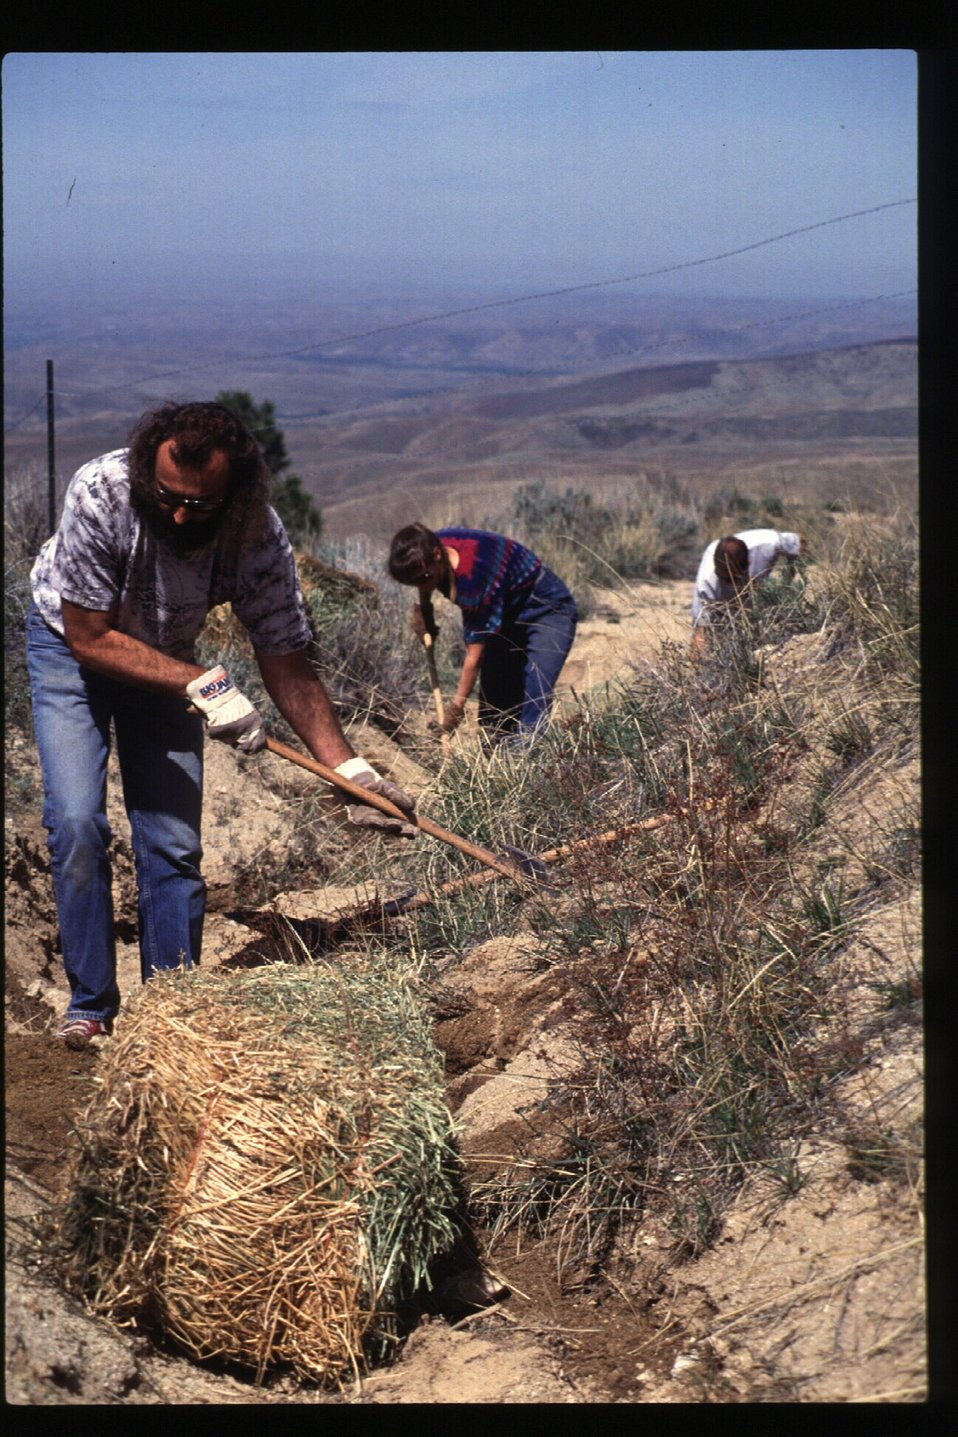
Rangeland and environmental education Boise Front Tending our Foothills Straw bale check dams Four Rivers Field Office LSRD Lower Snake River District